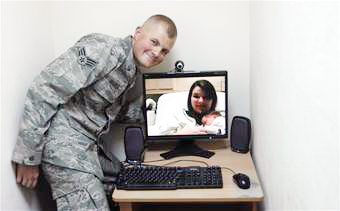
Airmen welcomes first child via Web cam

Senior Airman Daniel Warila poses for his first family portrait with his wife, Skye, and their newborn son, Lucas, Feb. 19 from an air base in Southwest Asia. Airman Warilla was able to watch Lucas' birth live. Airman Warila is a 380th Expeditionary Maintenance Squadron aerospace ground equipment mechanic.